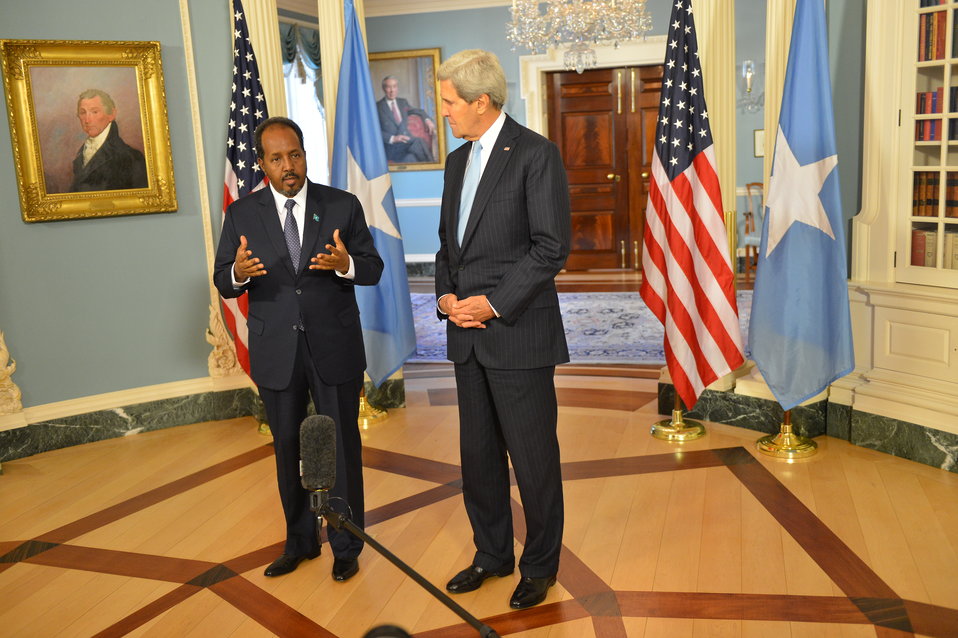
Secretary Kerry and Somali President Hassan Sheikh Mohamud Address Reporters

U.S. Secretary of State John Kerry and Somali President Hassan Sheikh Mohamud address reporters before their bilateral meeting at the U.S. Department of State in Washington, D.C., on September 20, 2013.